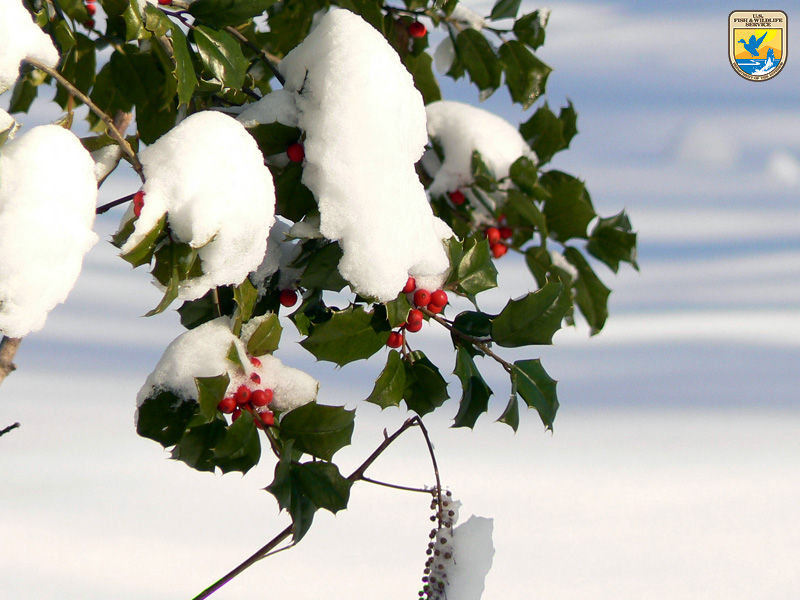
Holly berries in the snow